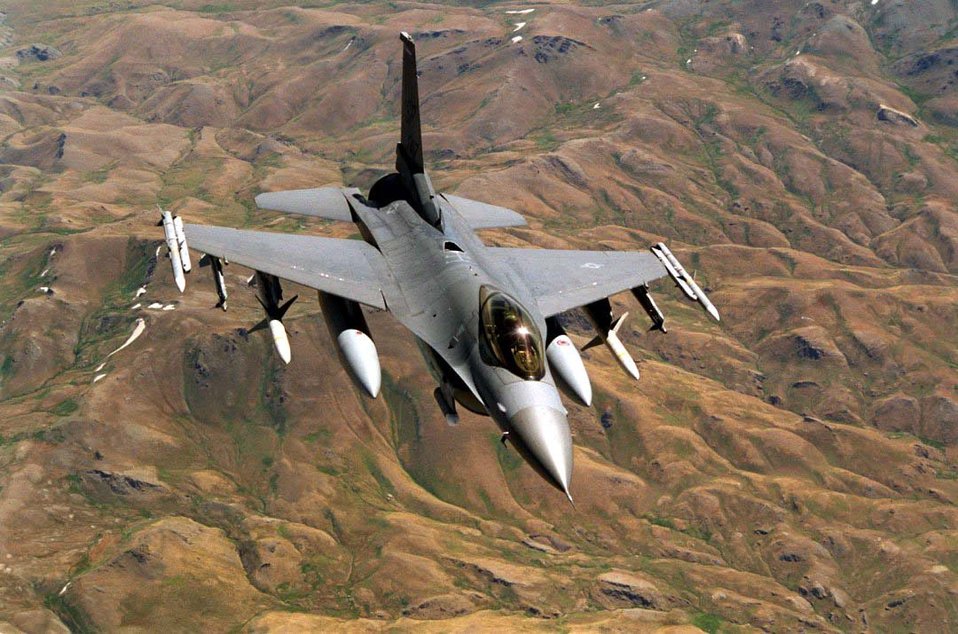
Northern Watching

OPERATION NORTHERN WATCH -- An F-16 flying in support of Operation Northern Watch.